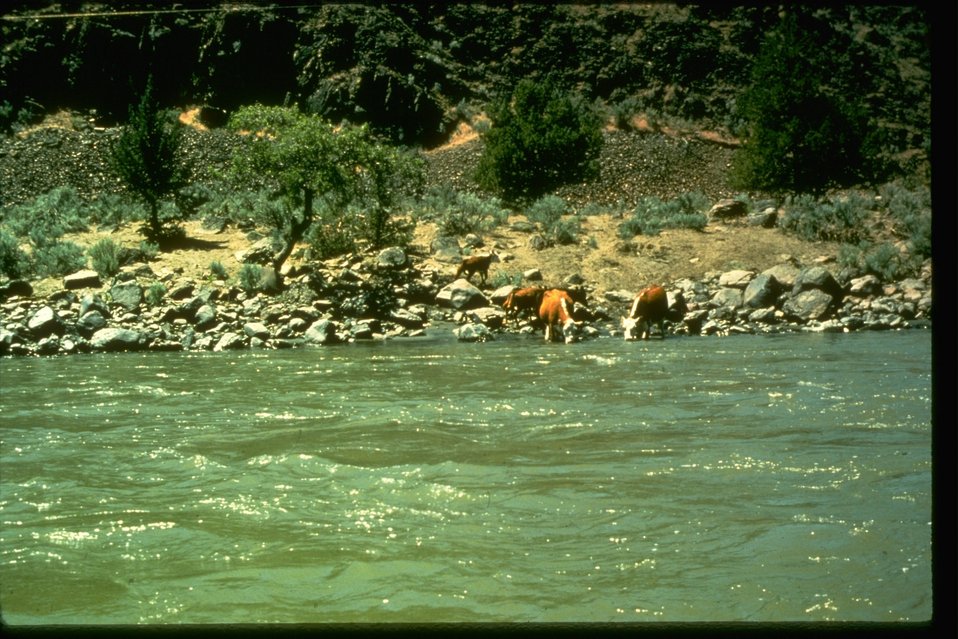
III B-G 5:E Cattle drinking along a wide mountain river.